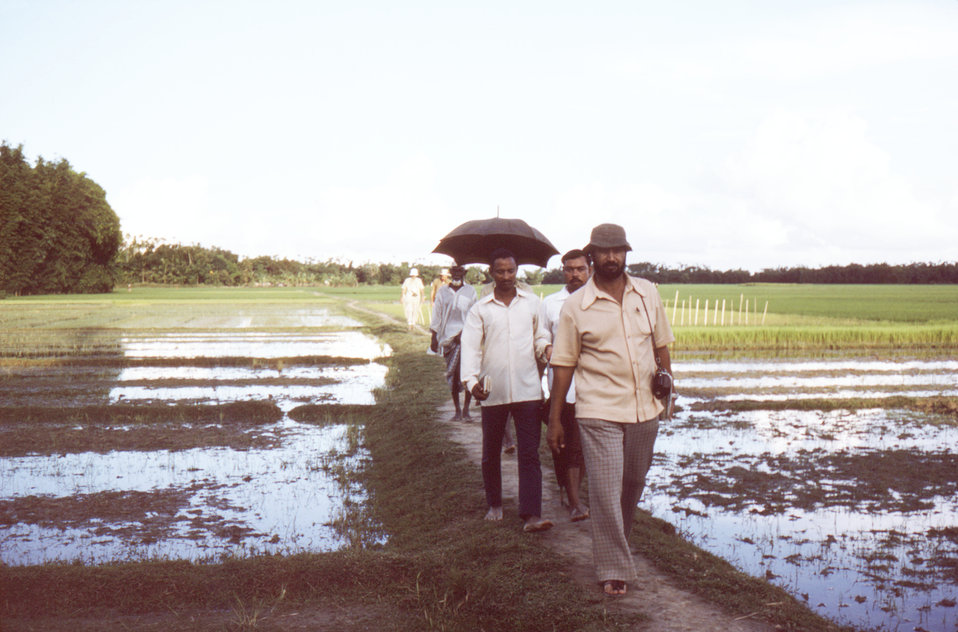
Depicted in this image, were members of the smallpox eradication team present in the Sylet District of north-eastern Bangladesh, who were in the process of conducting a national smallpox search. In this particular view, the team was crossing an earthen ridge between rice paddies.